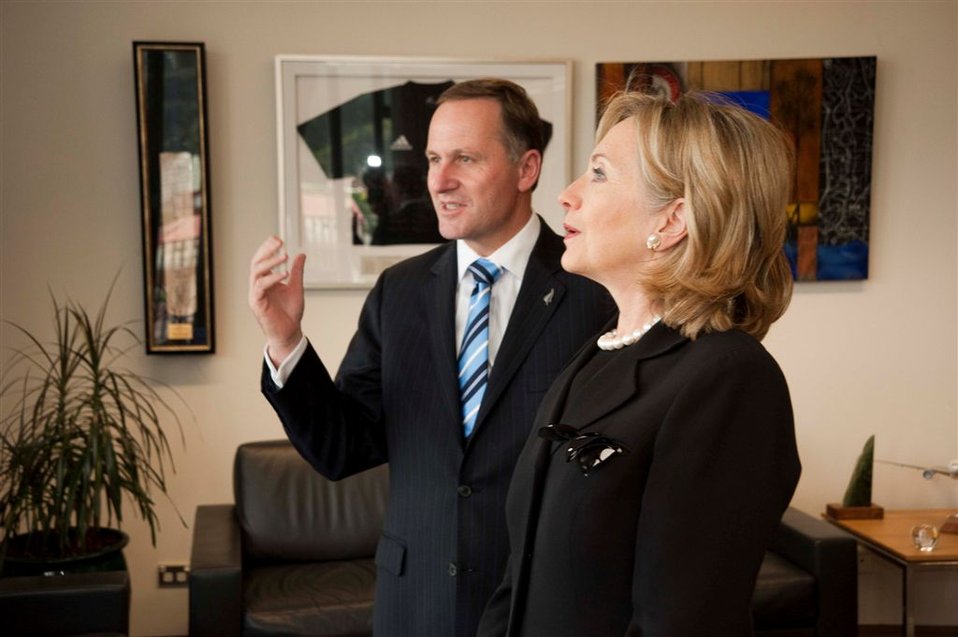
Secretary Clinton Speaks With New Zealand Prime Minister Key

U.S. Secretary of State Hillary Rodham Clinton speaks with New Zealand Prime Minister John Key in the Prime Minister's office in Wellington, New Zealand, on November 4, 2010.